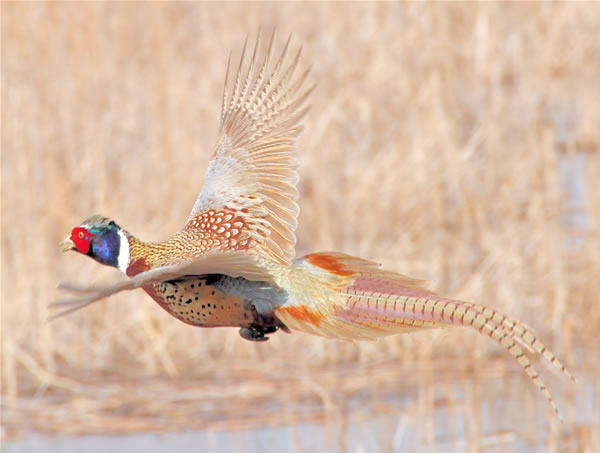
Ring-necked Pheasant on Lacreek National Wildlife Refuge 1

A rooster flushes and flies to heavier cover on Lacreek National Wildlife Refuge.